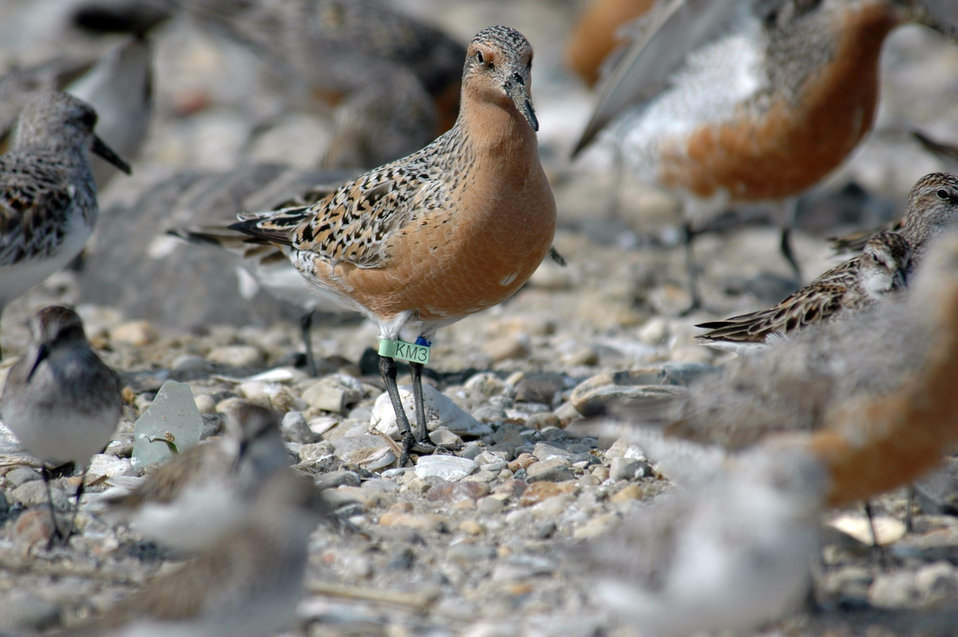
Tagged Red Knot

Mispillion Harbor, Delaware.